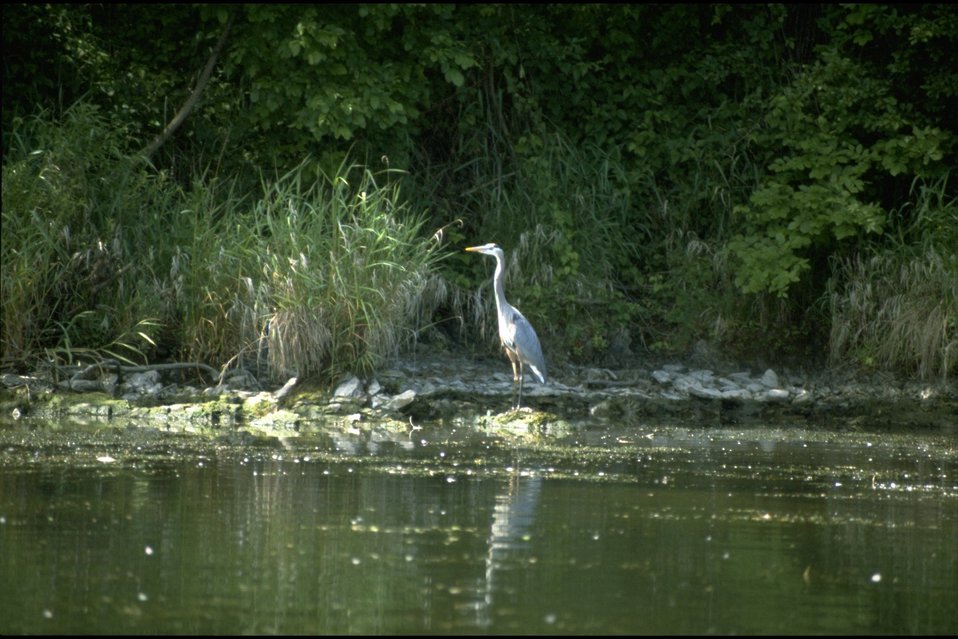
Rogue River - Great Blue Heron perched on a rock.